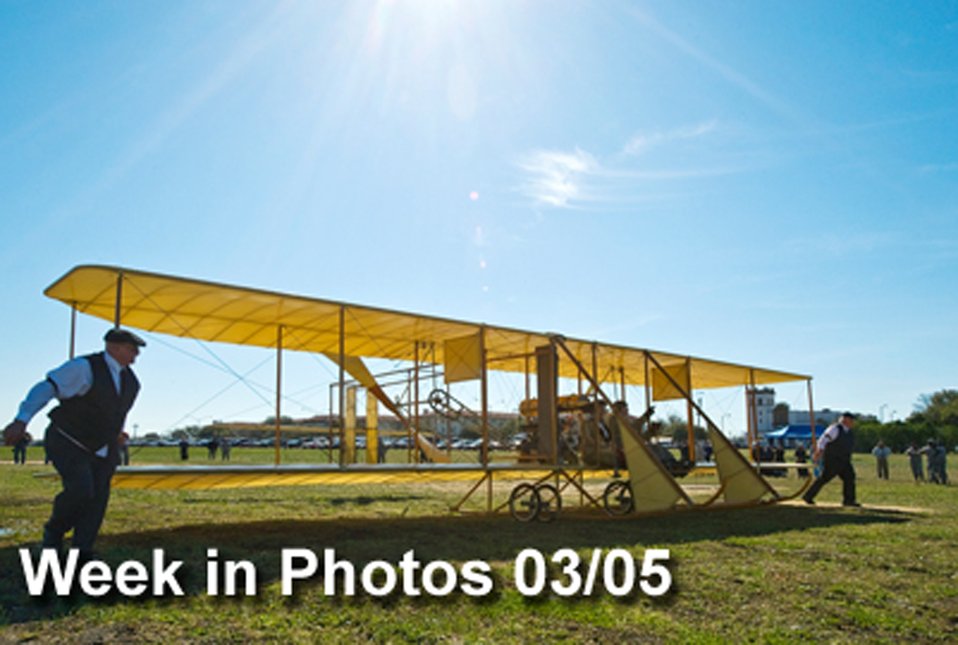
Air Force Week in Photos for March 5, 2010, highlights photos from around the Air Force. In this photo by Staff Sgt. Bennie J. Davis III, reenactors move the Wright